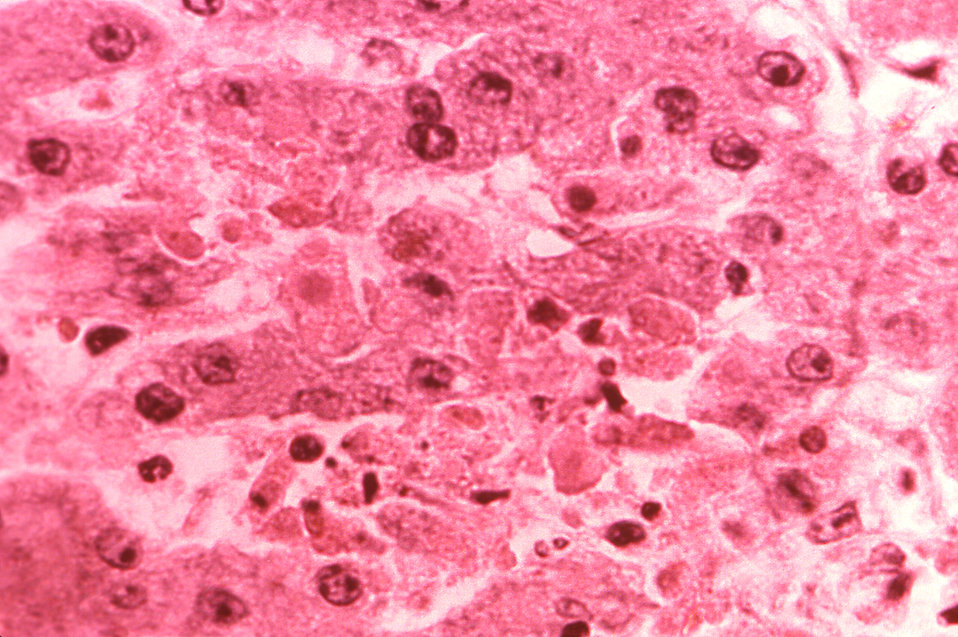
Under a magnification of 400X, this hematoxylin-eosin-stained (H&E) photomicrograph depicts the cytoarchitectural changes found in a liver tissue specimen extracted from a Lassa fever patient. Note the 'zone of acidophilic necrosis, and numbers of pycnotic nuclei.'.